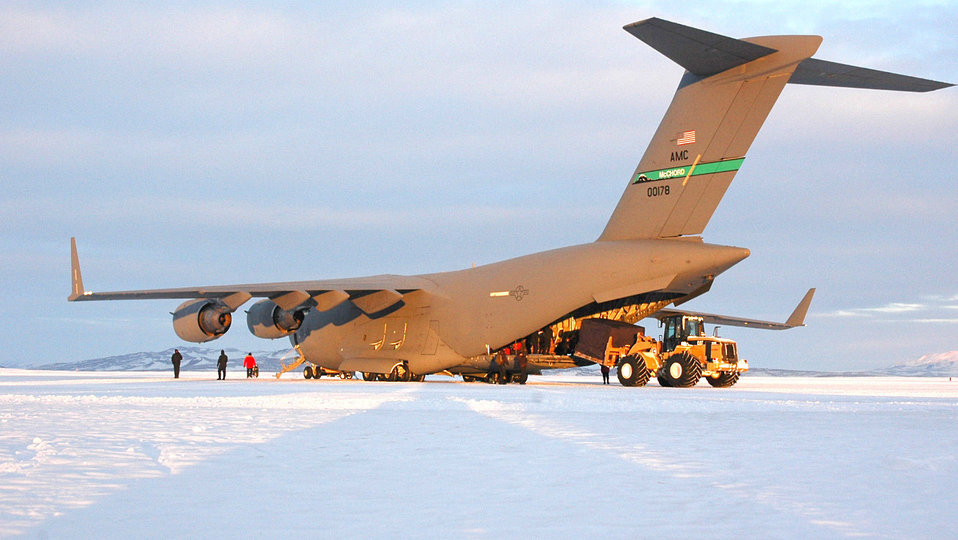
Reserve, active-duty Airmen fly late-season Deep Freeze mission

A C-17 Globemaster III from McChord Air Force Base, Wash., is loaded with cargo at McMurdo Station, Antarctica. A Reserve and active-duty Airmen from the 446th and 62nd Airlift Wings flew the late season Operation Deep Freeze mission April 17.